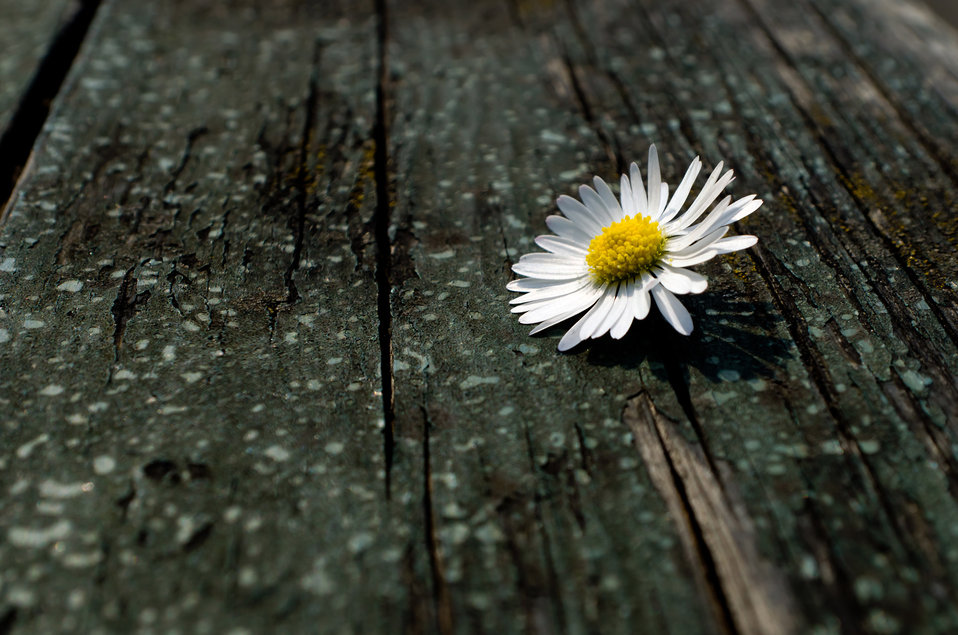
Daisy on the wood.